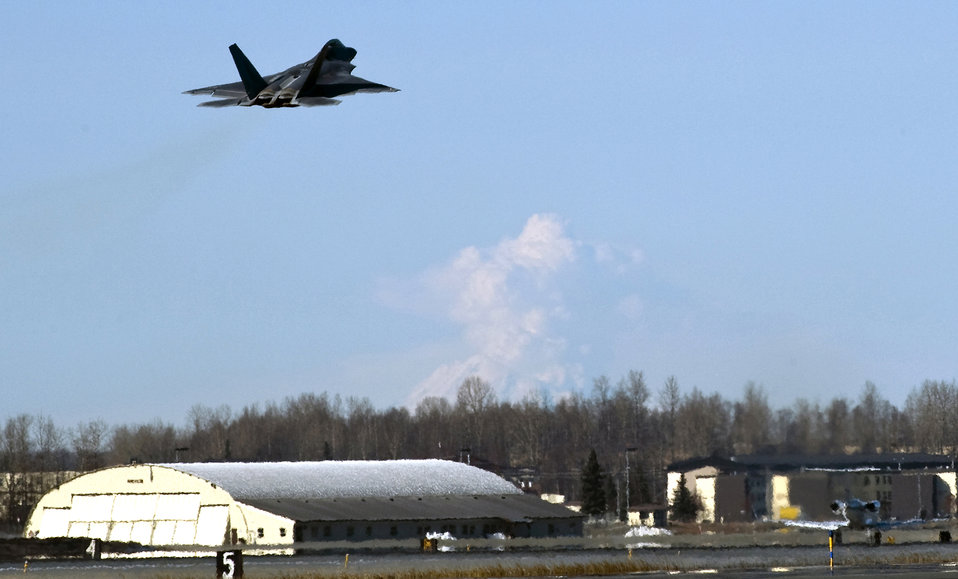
Alaskan hazard to flight

An F-22 Raptor takes off from Elmendorf Air Force Base, Alaska, while Mount Redoubt spews steam into the morning sky. Mount Redoubt, which is 100 miles southwest of Elmendorf, has been active for months, and is keeping emergency managers and early warning personnel on the edge of their seats with periodic eruptions and discharges of steam. So far only a small amount of volcanic ash has fallen on the base.